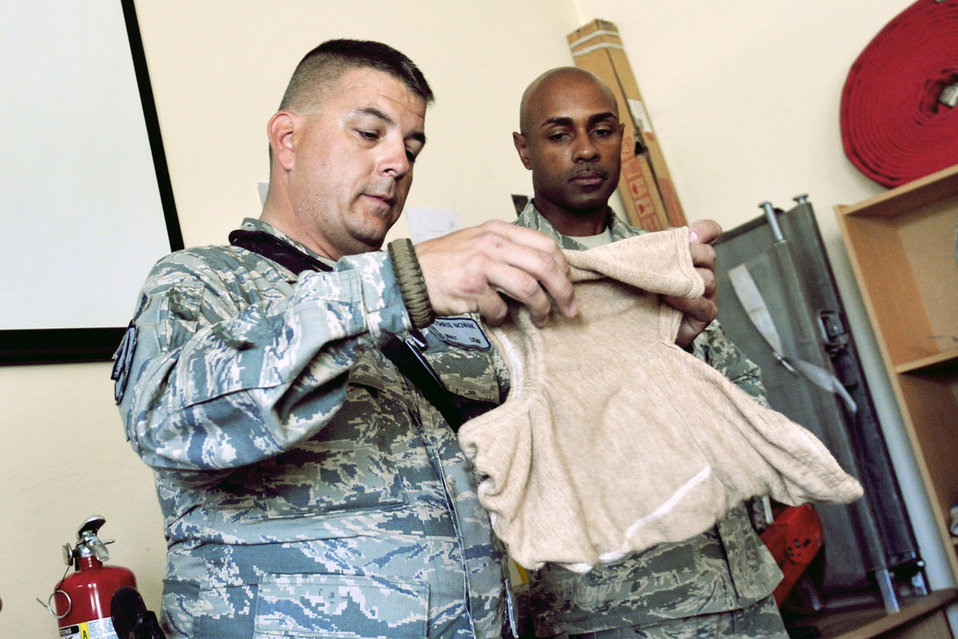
Firefighters donate to Afghans

Master Sgt. Edward Nowak displays a donated Nomex fire-protection hood to trainees inside the Afghan air force fire fighting training complex May 28, 2011, in Kabul, Afghanistan. The Nomex hoods were donated by the Robeson County Firefighters Association in Parkton, N.C. Sergeant Nowak is a 440th Air Expeditionary Advisory Squadron C-27 production superintendent adviser and volunteer firefighter.